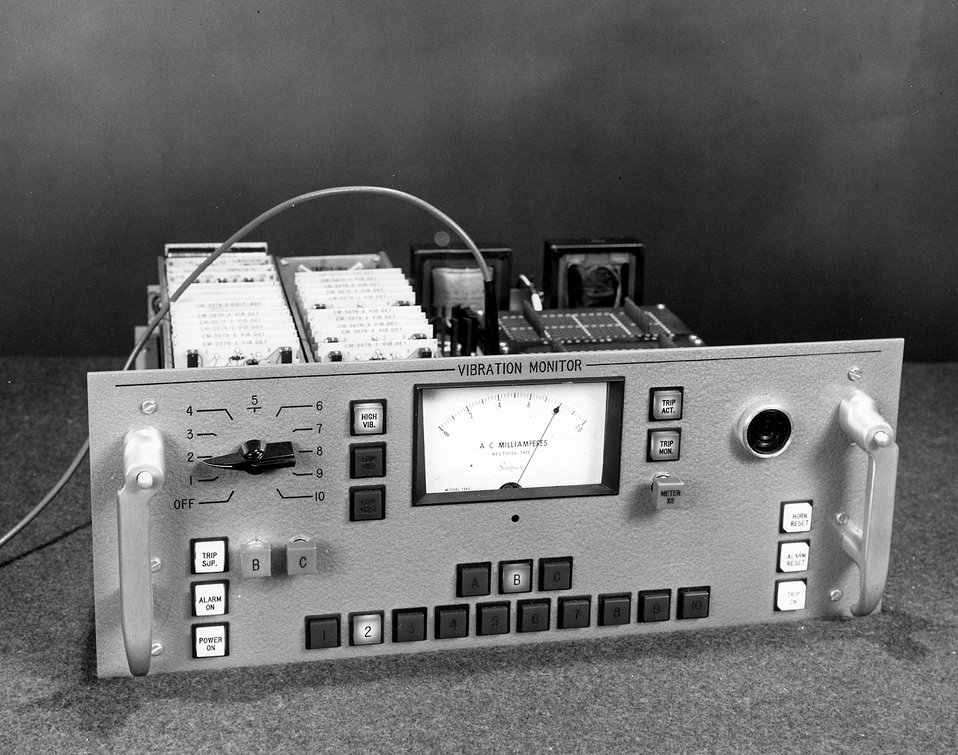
A multi-point vibration monitoring system for measuring vibration emanating from rotating equipment has been designed by the Paducah Gaseous Diffusion Plant, Paducah, Kentucky. Circa 1972.